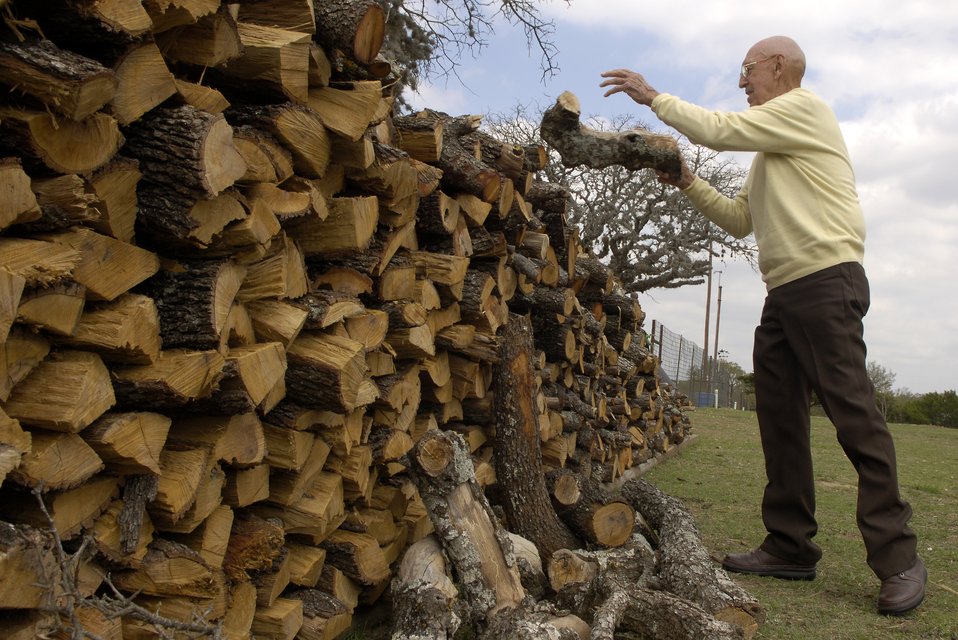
Doolittle Raider remembers historic mission over Japan

Even at 90 years of age, retired Lt. Col. Dick Cole remains active on his farm in Comfort, Texas. Colonel Cole was one of 80 men, led by then Lt. Col. James Doolittle, who volunteered to bomb mainland Japan on April 18, 1942. Colonels Cole and Doolittle were the pilots of the first of 16 B-25 Mitchell medium bombers that launched from the USS Hornet, floating approximately 500 miles from Japan's coast. The mission was the first American strike on the Japanese mainland. Only 16 of the original 80 men remain alive today.